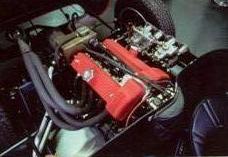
1000 bandini c